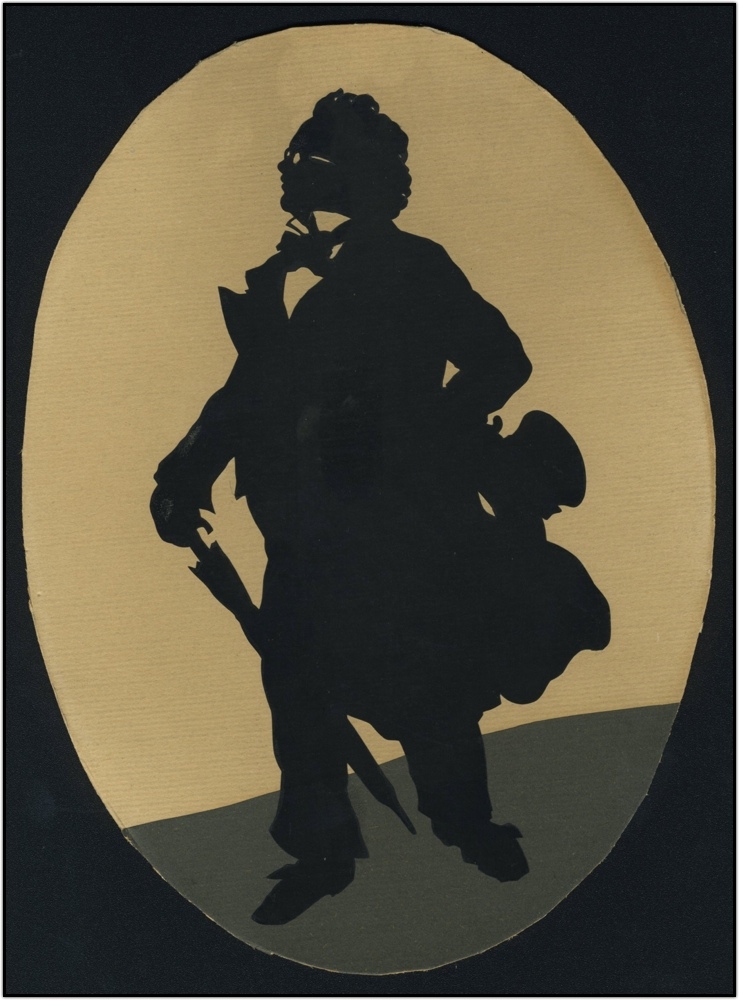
Franz Schubert by Otto Böhler